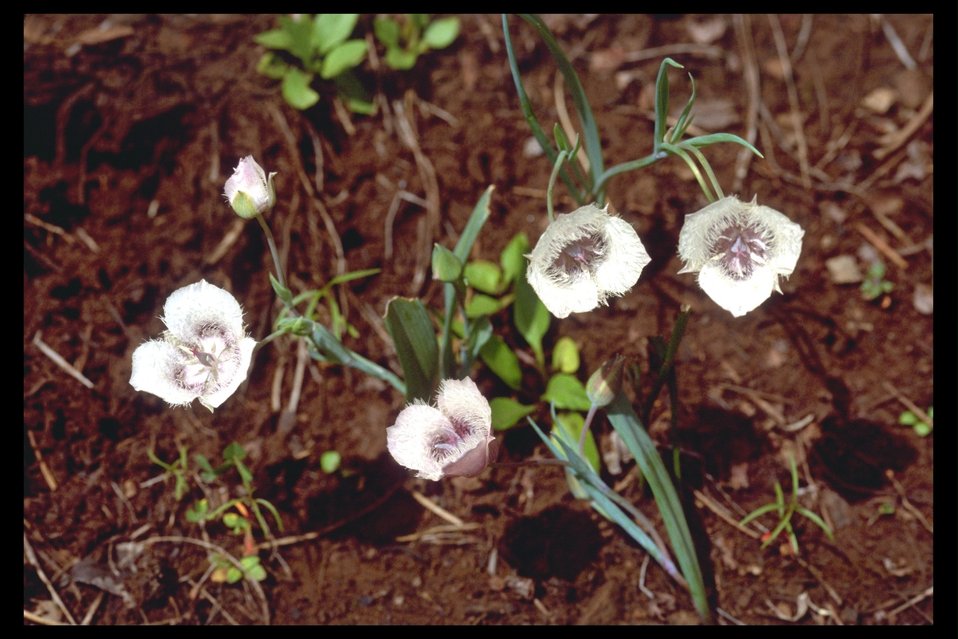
Cat's Ear (Calochortus tolmiei) found at Lower Table Rock.